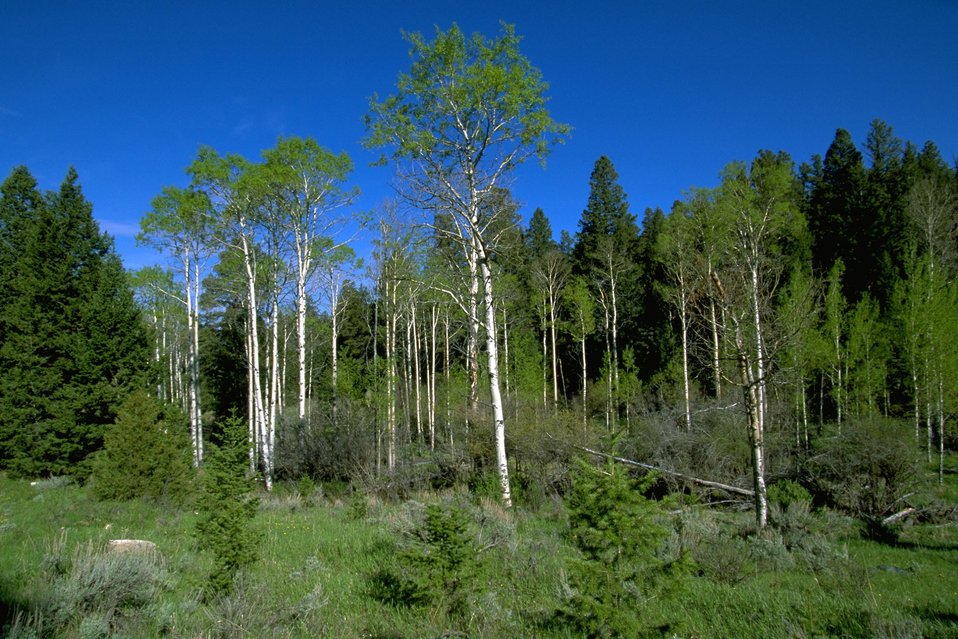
Aspen alongside the MacLean Road south of Humbug Spires